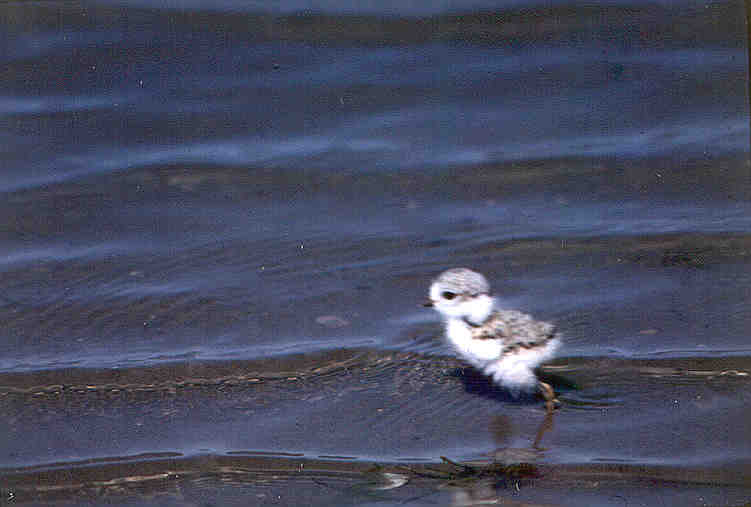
Piping plover chick, Bowdoin WMD